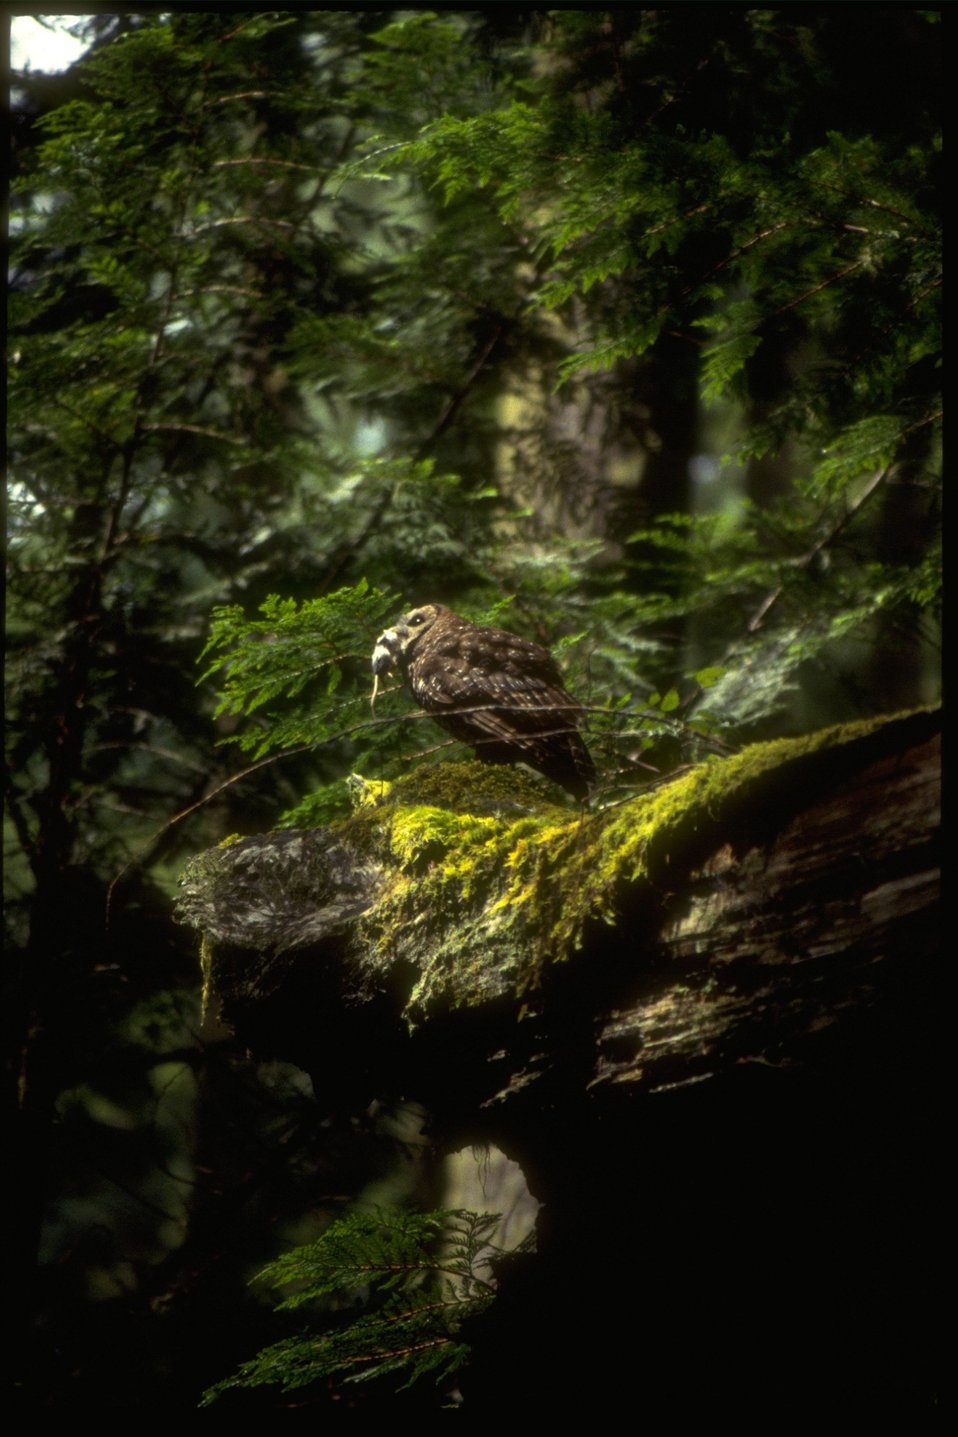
Northern Spotted Owl with a mouse.